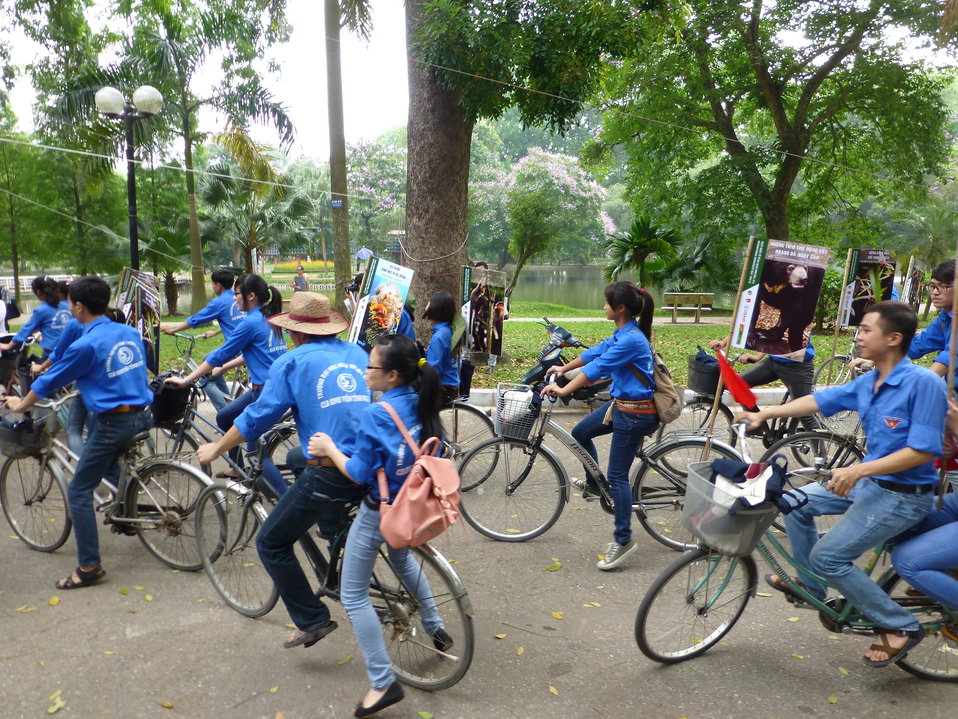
USAID Supports International Day for Biological Diversity in Hanoi